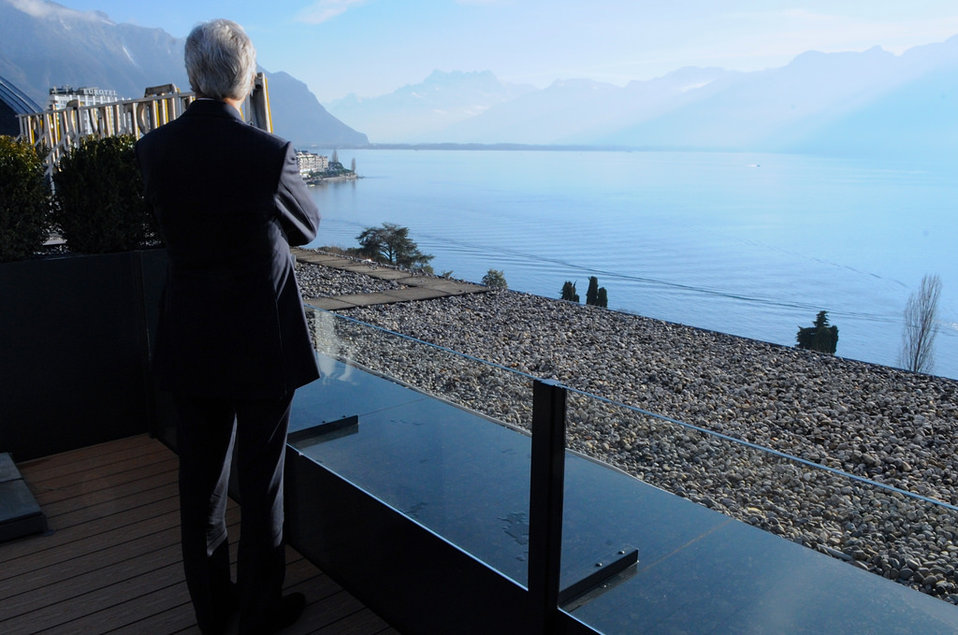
Secretary Kerry Admires Lake Geneva, French Alps During a Break in the Conference

U.S. Secretary of State John Kerry admires the view of Lake Geneva and the Dents du Midi mountain cropping in the nearby French Alps during a break between meetings at the Geneva II conference in Montreux, Switzerland, on January 22, 2014.